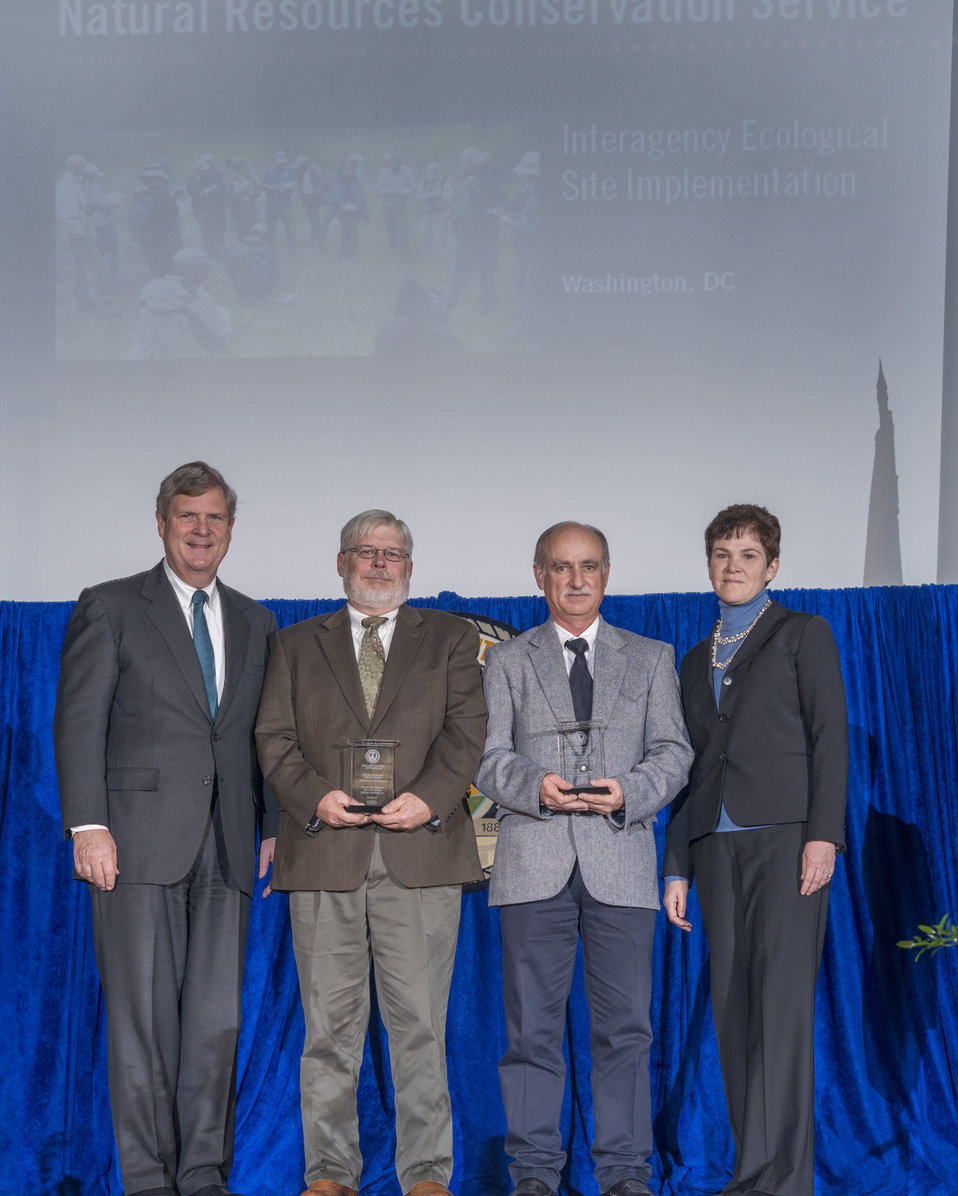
Agriculture Secretary Tom Vilsack and Agriculture Deputy Secretary Krysta Harden present the Secretary’s Honor Award to Natural Resources Conservation Service, in Washington, D.C. Group leaders Dennis W. Thompson and George L. Peacock, Jr. for developing an interagency Ecological Site Manual and Handbook providing clear guidance and delivering training resulting in uniform implementation across scientific, agency and Department boundaries at the 2013 Secretary's Honor Awards in the Jefferson Auditorium at the U.S. Department of Agriculture (USDA) in Washington, D.C. on Wednesday, Dec. 11, 2013.